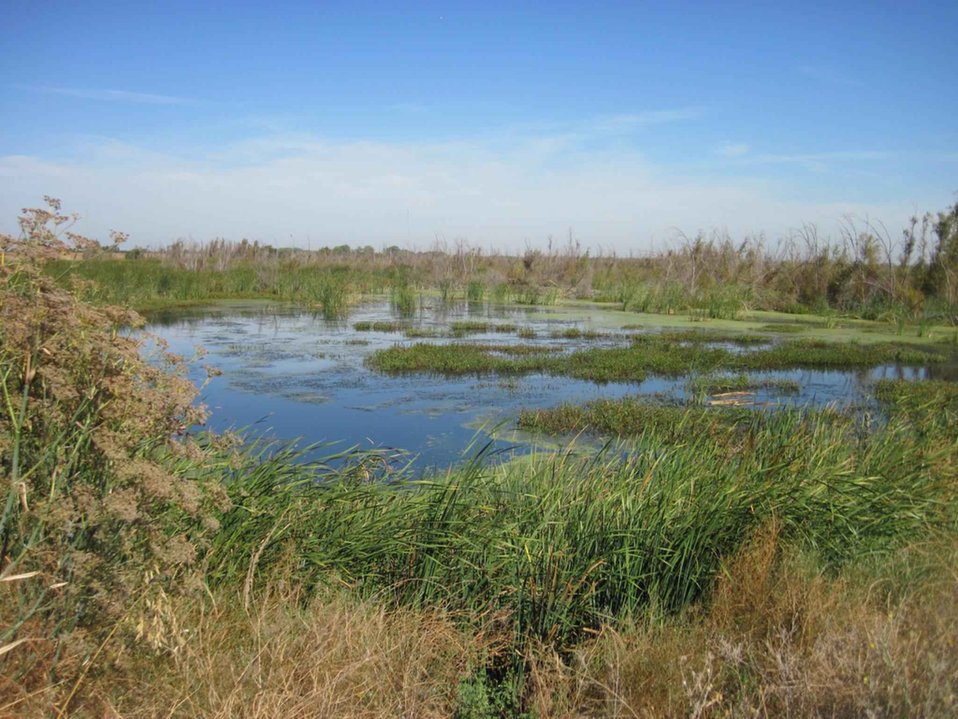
English:
Image title: Beautiful marsh wetland landscape Image from Public domain images website, http://www.public-domain-image.com/full-image/nature-landscapes-public-domain-images-pictures/wetlands-and-swamps-public-domain-images-pictures/beautiful-marsh-wetland-landscape.jpg.html